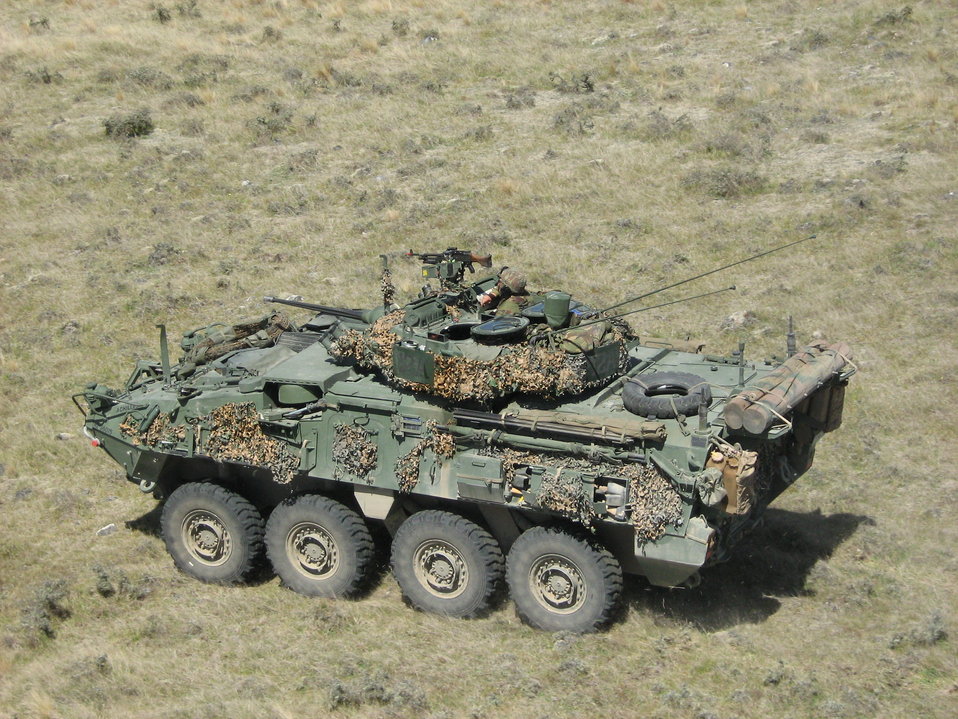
My photo dated 1 Nov 07